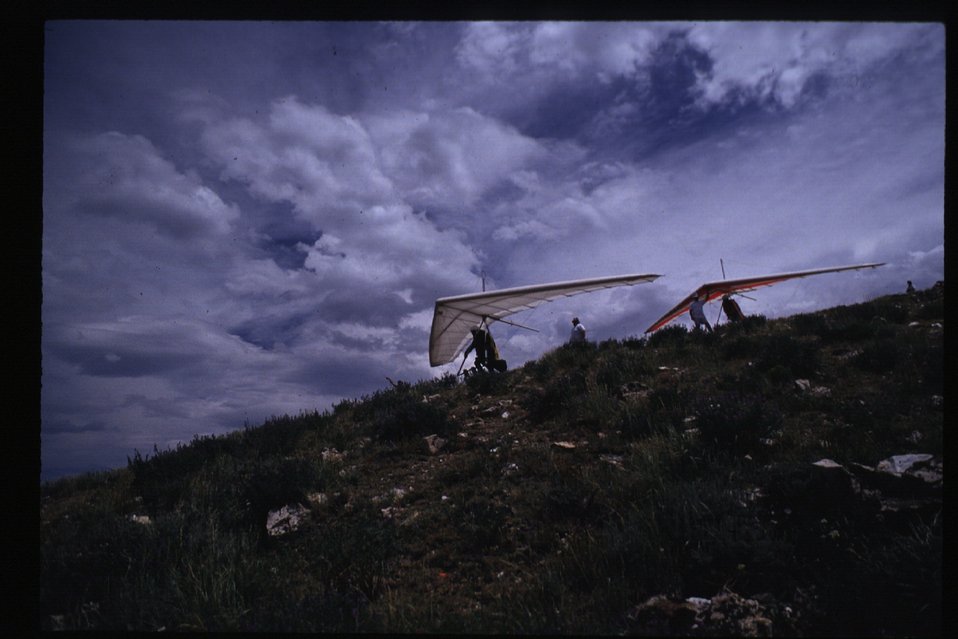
Hang Gliders on King Mountain Arco Idaho Idaho Falls Field Office USRD Upper Snake River District